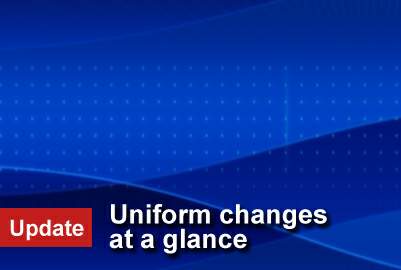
Uniform updates

Updates to the recent Virtual Uniform Board results have been released.